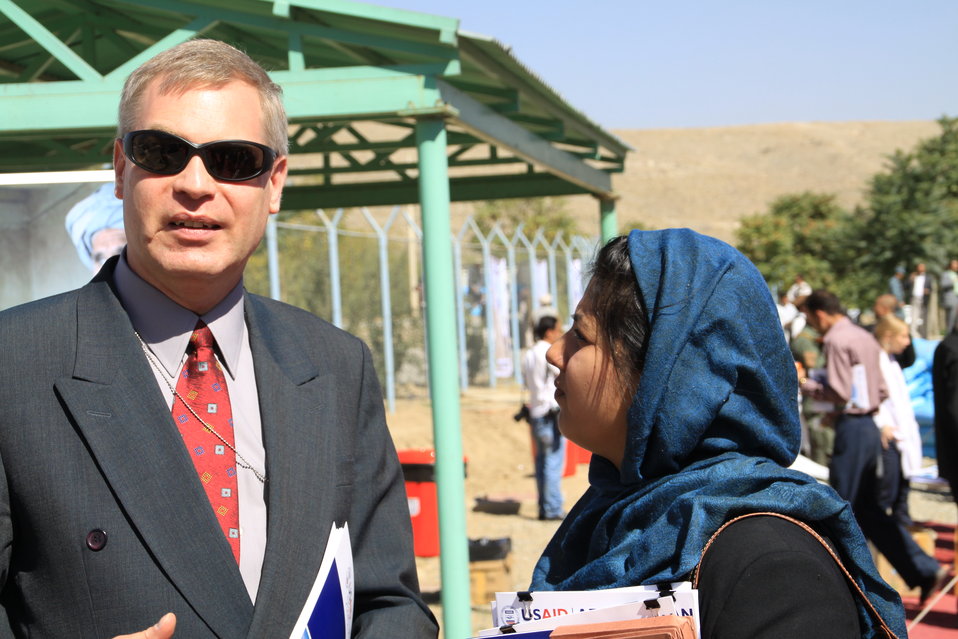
AVIPA Plus Wheat Seed Distribution 101005

US Ambassador Karl Eikenberry and USAID Acting Mission Director Kevin Brownawell joined the Minister of Agriculture, Irrigation and Livestock, H.E. Minister Mohammed Rahimi in signing a Memorandum of Understanding and distributing vouchers to area farmers for wheat and fertilizer.

US Ambassador Karl Eikenberry and USAID Acting Mission Director Kevin Brownawell joined the Minister of Agriculture, Irrigation and Livestock, H.E. Minister Mohammed Rahimi in signing a Memorandum of Understanding and distributing vouchers to area farmers for wheat and fertilizer.

US Ambassador Karl Eikenberry and USAID Acting Mission Director Kevin Brownawell joined the Minister of Agriculture, Irrigation and Livestock, H.E. Minister Mohammed Rahimi in signing a Memorandum of Understanding and distributing vouchers to area farmers for wheat and fertilizer.